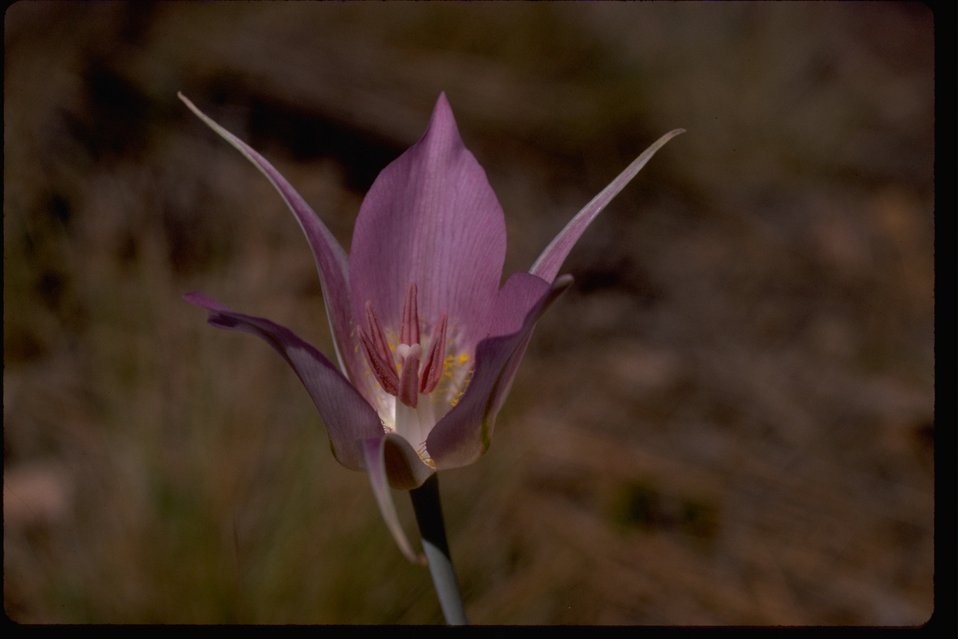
Mariposa